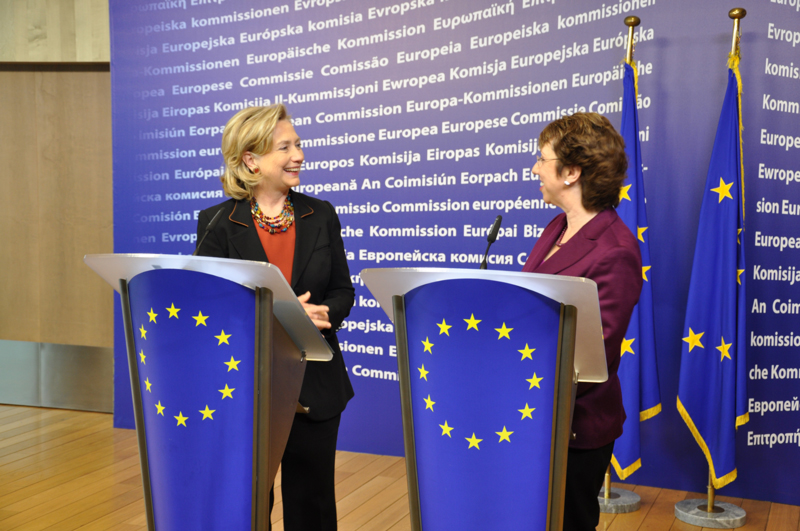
Secretary Clinton and EU High Representative Ashton Deliver a Joint Press Statement

U.S. Secretary of State Hillary Rodham Clinton and EU High Representative for Foreign Affairs and Security Policy, and Vice President of the European Commission, Catherine Ashton deliver their public statements in a joint press conference on Pakistan at the Berlaymont building in Brussels, Belgium, on October 14, 2010.